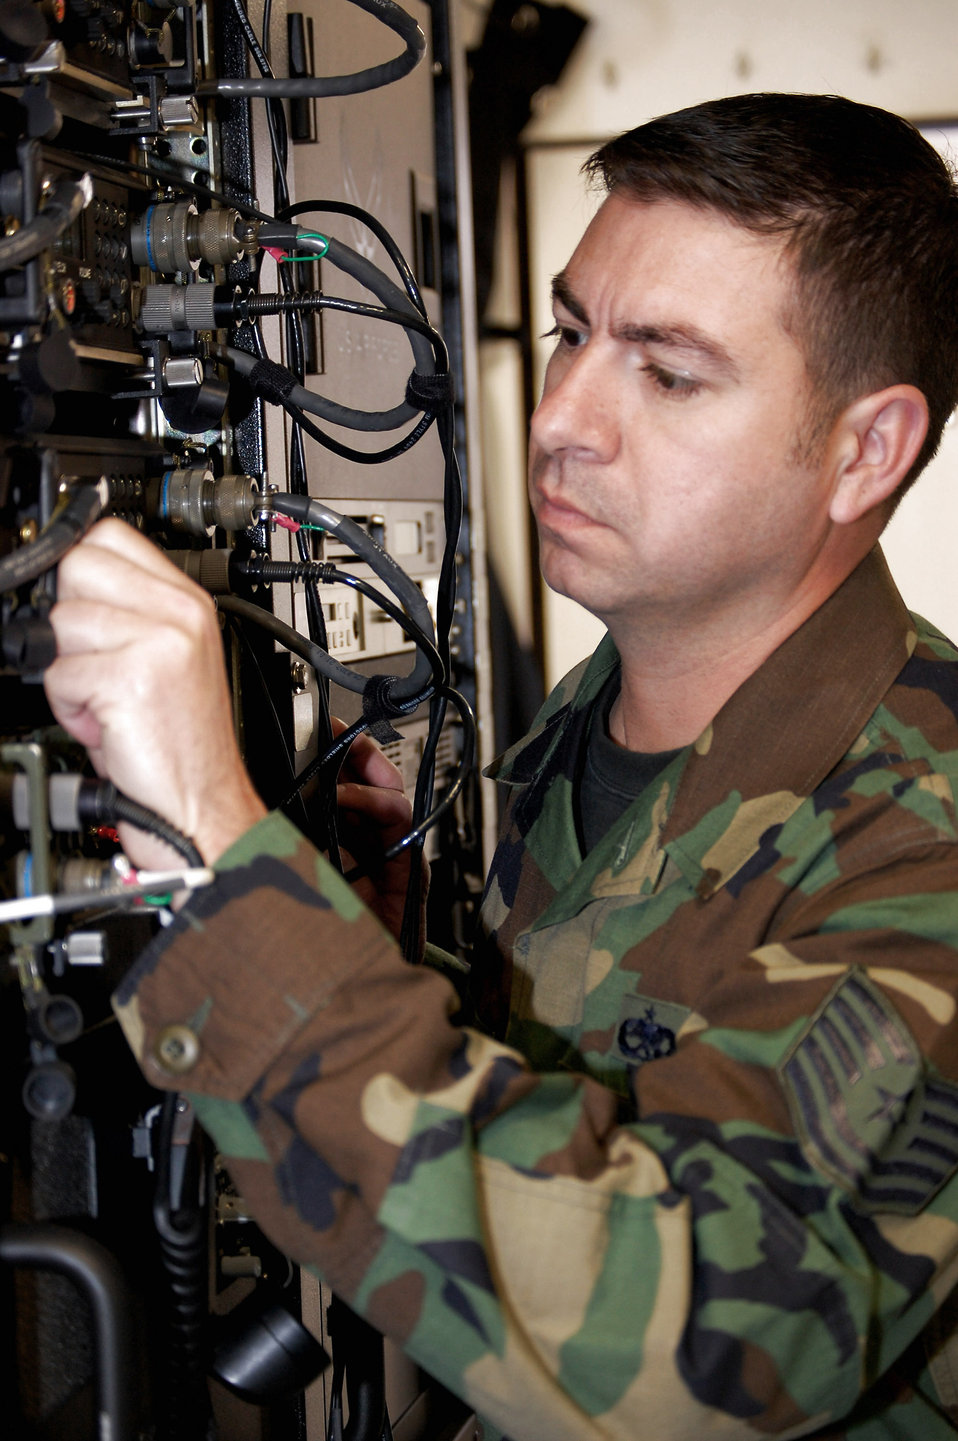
Newest mobile air shelter set up for training

Tech. Sgt. Don Colbert works on adjusting an antenna on the Hard-sided Expandable Lightweight Air Mobile Shelter in the Mobility Operations School's Mobile C3 training facility Oct. 29 Fort Dix, N.J. Sergeant Colbert is the course director for the Air Force Expeditionary Center's Mobile Command, Control and Communications Systems Course.